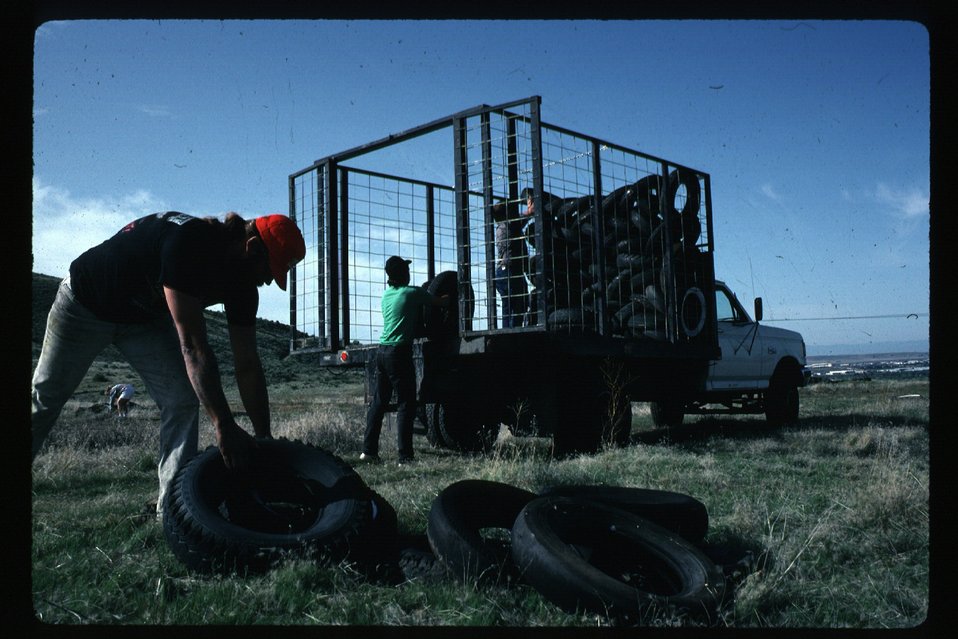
Rangeland Tending the Boise Foothills Clean up Four Rivers Field Office LSRD Lower Snake River District